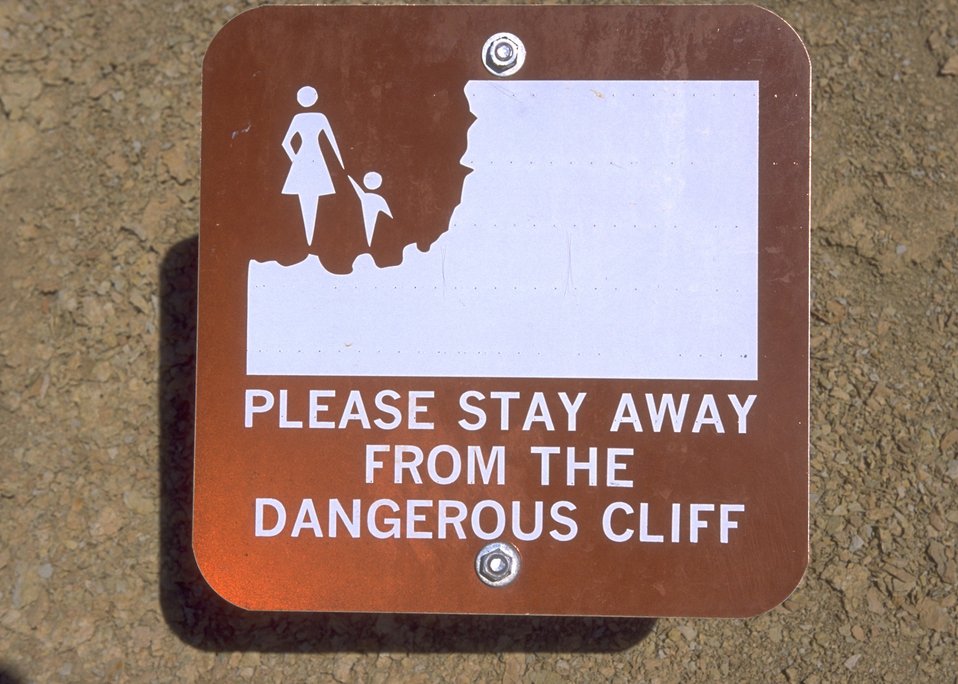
Warning sign at the Red Gulch Dinosaur Tracksite, Worland Field Office.